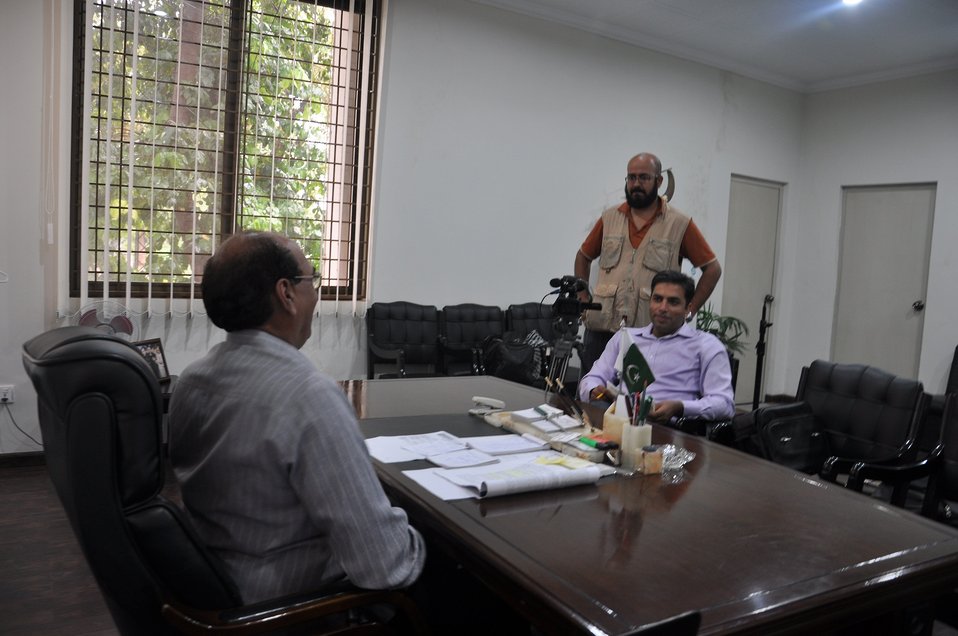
Field Visit at MEPCO - Power Factor Correction Performance Improvement Project 3

Multan, September 13, 2011- USAID's Power Distribution Program implementing its Rural Feeder Optimization Performance Improvement Project at MEPCO's Lal Kamal Feeder. The Lodhran Subdivision was jointly selected as the site for the Power Factor Correction Performance Improvement Project. This project aimed at reduction of technical losses, improvement of voltage and release of power system capacity by installing capacitors on the Tube-well motors active on the feeder.